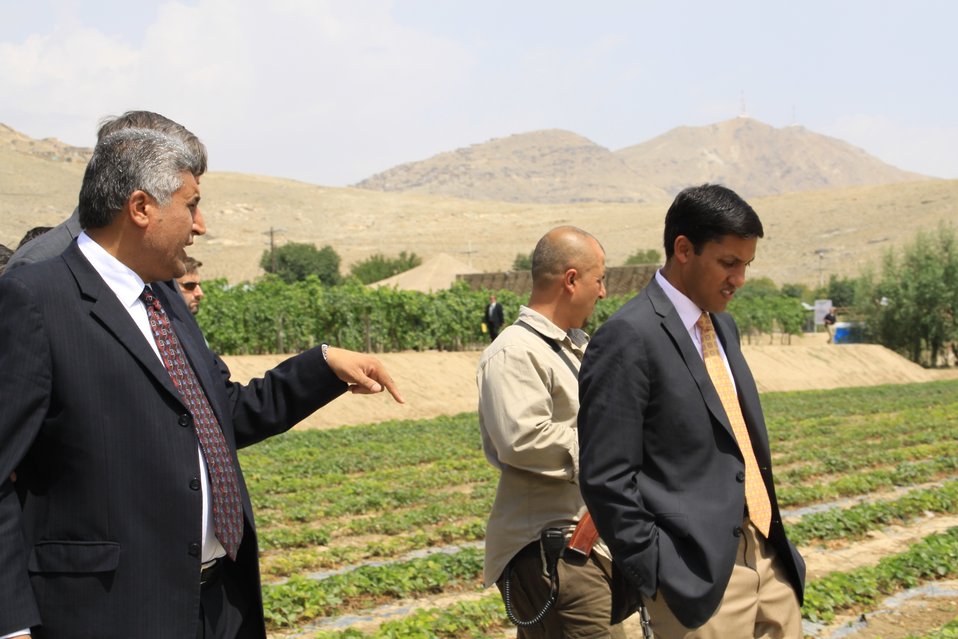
Badam Bagh Farm